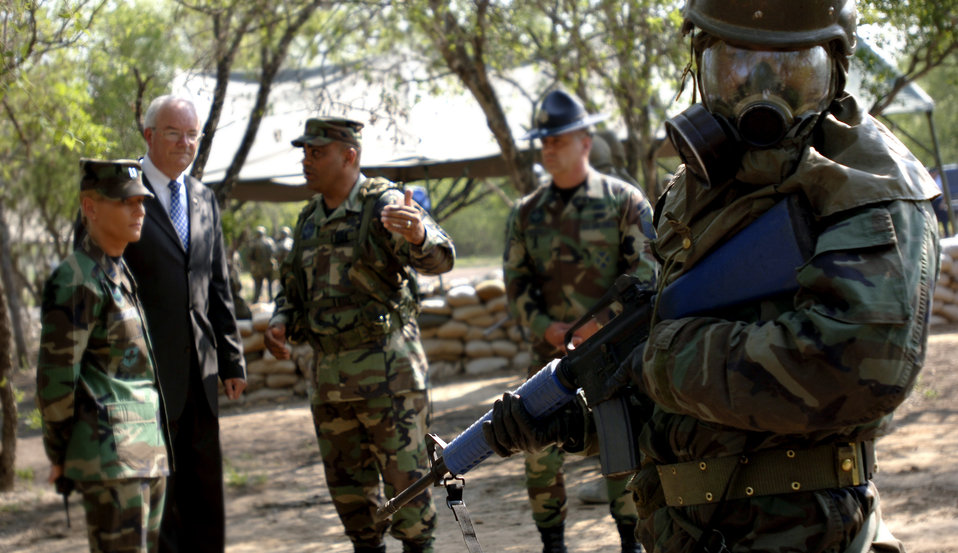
Secretary Wynne expects Airmen to continue to excel

Master Sgt. Gregorio Andrades tells Secretary of the Air Force Michael W. Wynne how the Airman wearing the gas mask is taught how to guard an unexploded ordnance at Lackland Air Force Base, Texas, on June 2, 2006. All basic military trainees go through the field training. Secretary Wynne was in San Antonio visiting various military installations and training sites.